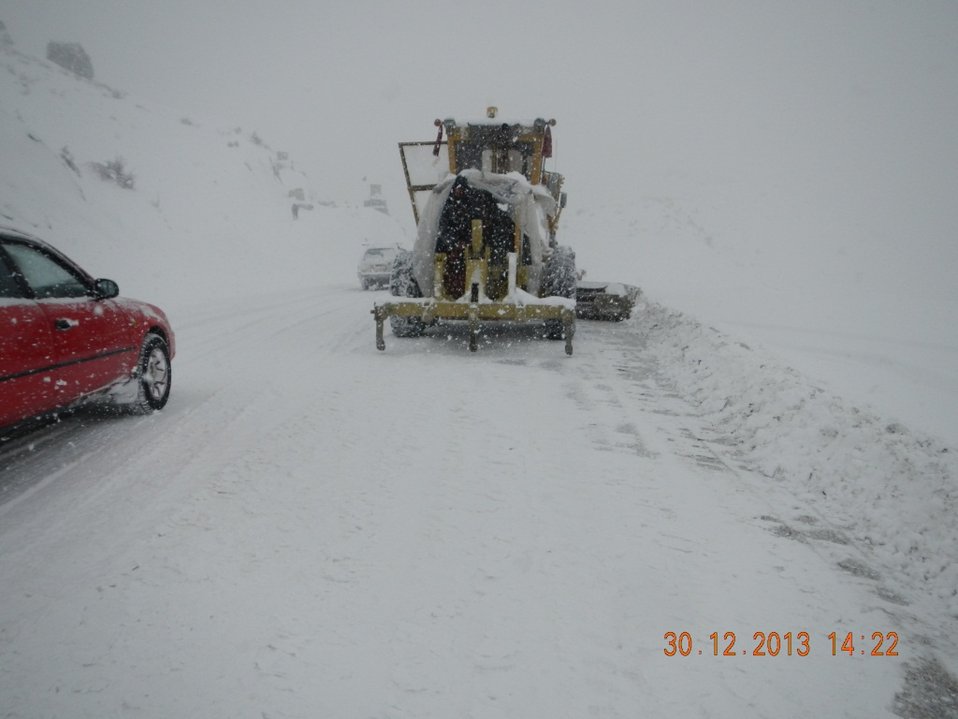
Snow removal work on the Gardez Khost road